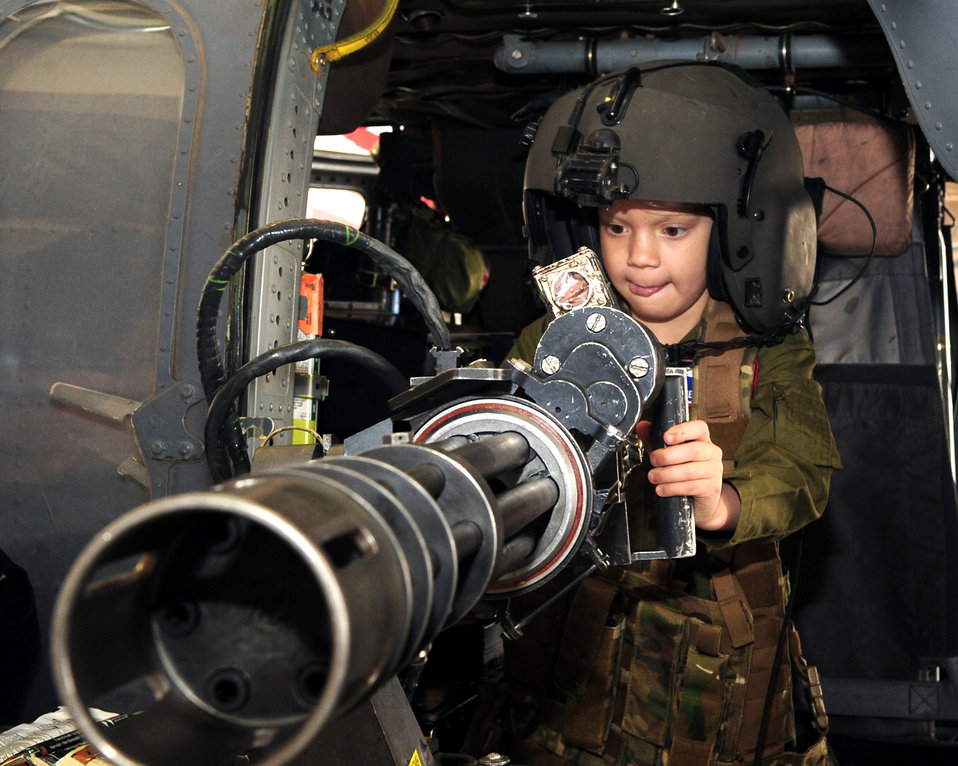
Big gun, big heart

Pilot for a Day participant Chenoa Richner, 7, sits in the aerial gunner seat of a HH-60 Pave Hawk as part of her tour of Davis-Monthan Air Force Base, Ariz., Dec. 29, 2010. The Pilot for a Day Program gives local children with illnesses a day completely devoted to them and their interest in aviation.